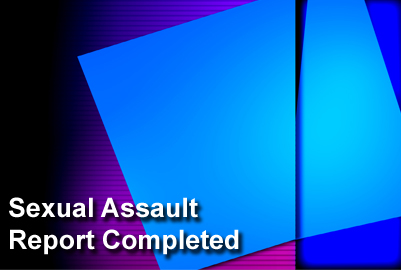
Report completed

The Defense Task Force on Sexual Assault in the Military Services has completed its assessment of the progress of DOD officials in improving response to the needs of sexual assault victims and turned its report over to Defense Secretary Robert M. Gates for review.